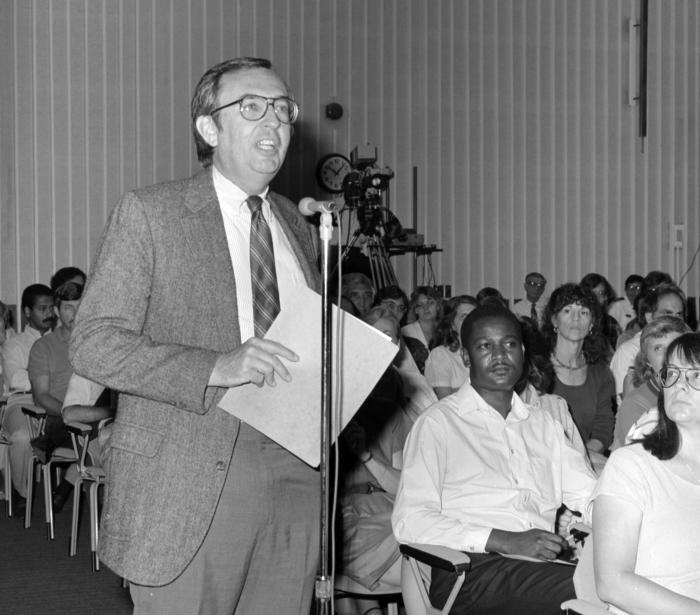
This photograph showed Dr. Frederick A. Murphy, former Director of the National Center for Infectious Diseases, asking questions of Dr. Jonas Salk during a 1988 CDC presentation.